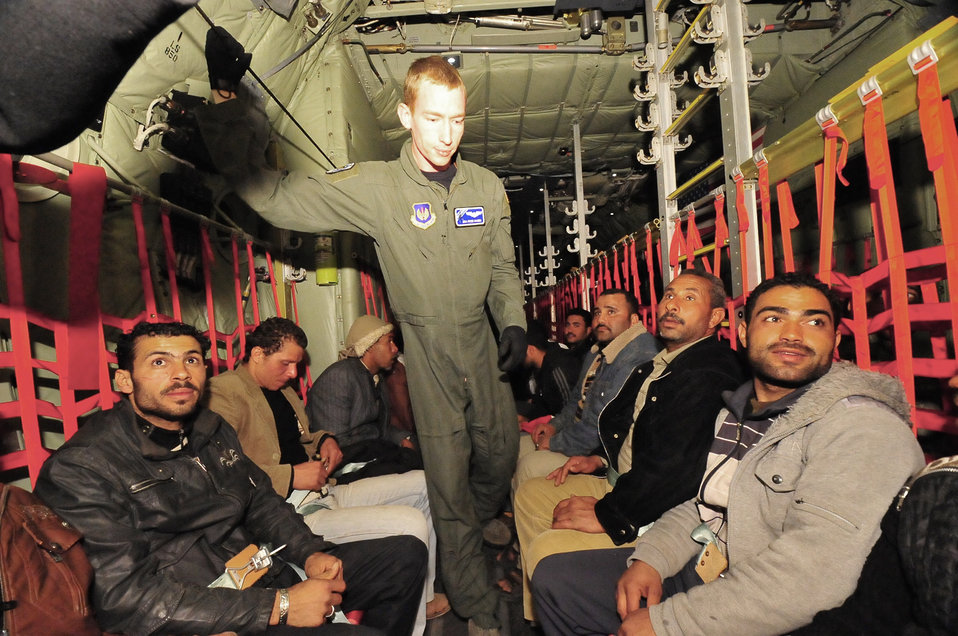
U.S. military aircraft bring displaced Egyptians home

Displaced Egyptian citizens who fled to Tunisia from violence and instability in Libya are transported aboard an Air Force C-130J from Djerba, Tunisia to Cairo, Egypt March 5, 2011. This response to the developing humanitarian crisis is part of a broader U.S. government effort to relieve suffering caused by the crisis the in Libya.